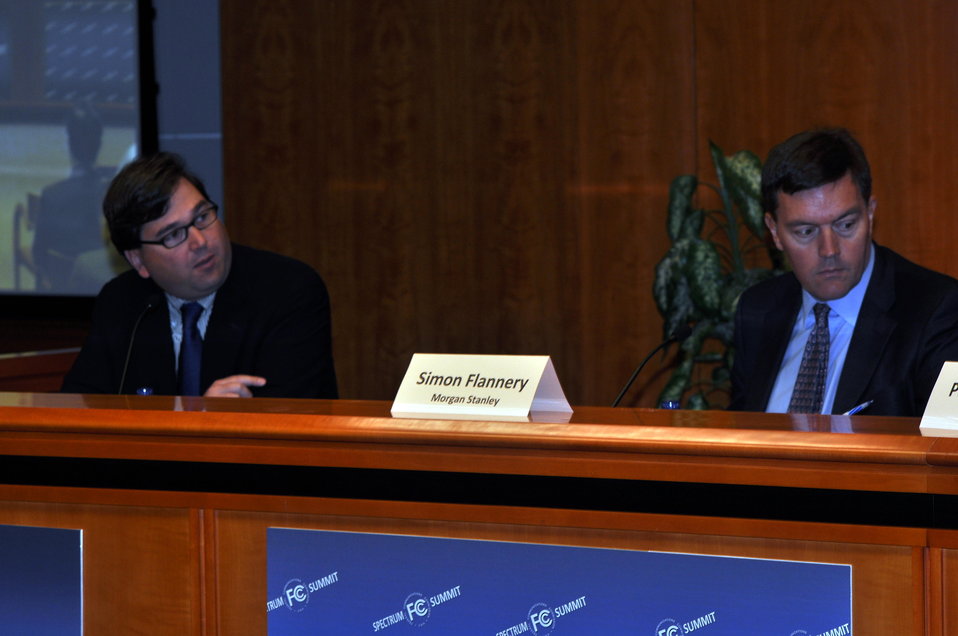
Spectrum Summit